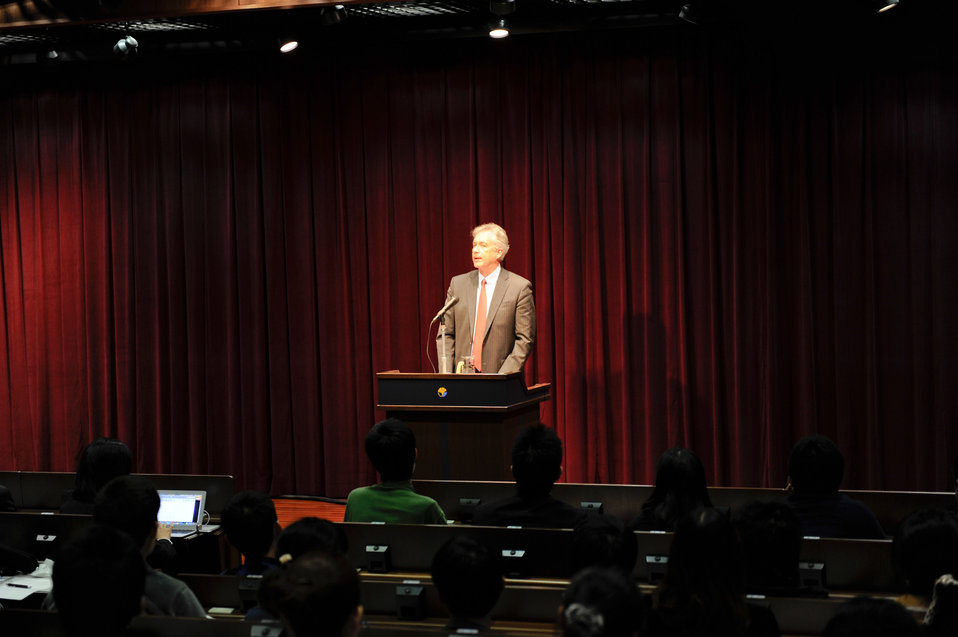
Deputy Secretary Burns Discusses Increasing U.S. Engagement in the Asia Pacific Region

U.S. Deputy Secretary of State William Burns discusses increasing U.S. engagement in the Asia Pacific region, including establishing a positive relationship with China, working towards North Korea's denuclearization, and building a new regional architecture, at the University of Tokyo in Japan on October 27, 2011.